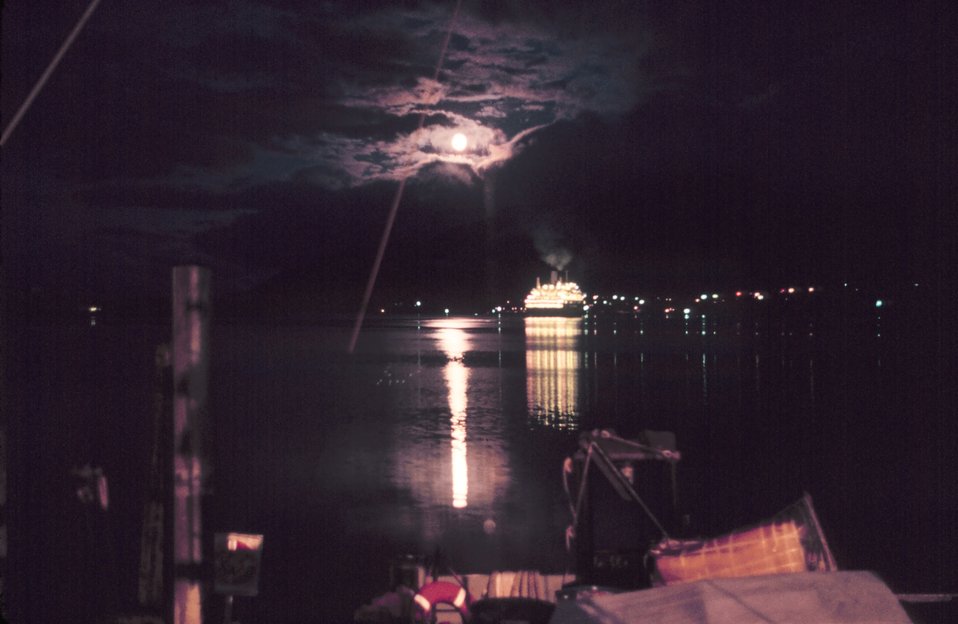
Cruise ship at Juneau in the moonlight